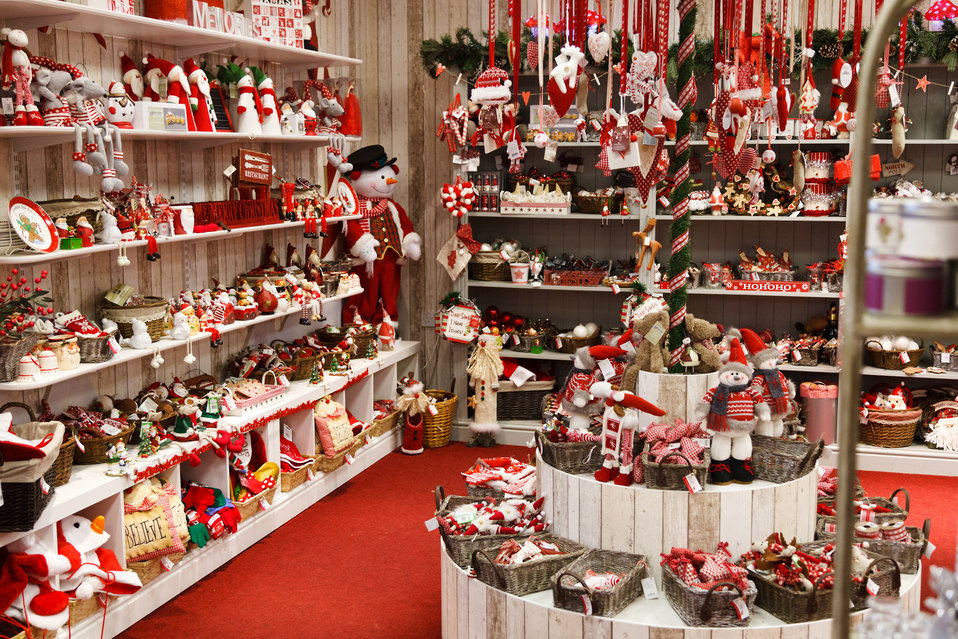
Little christmas shop

Nice little christmas shop.